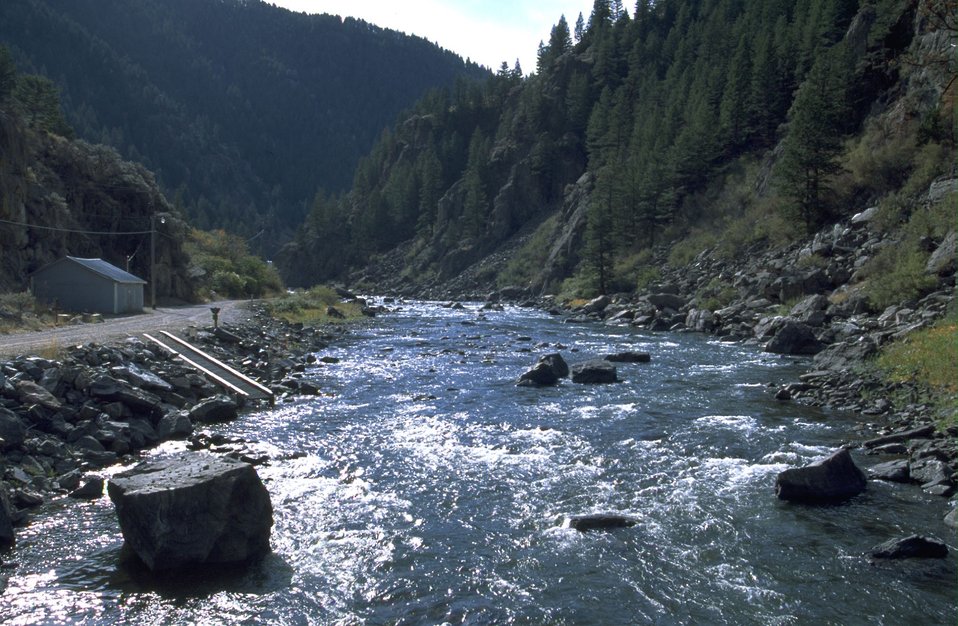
Boat Launch in Bear Trap Canyon